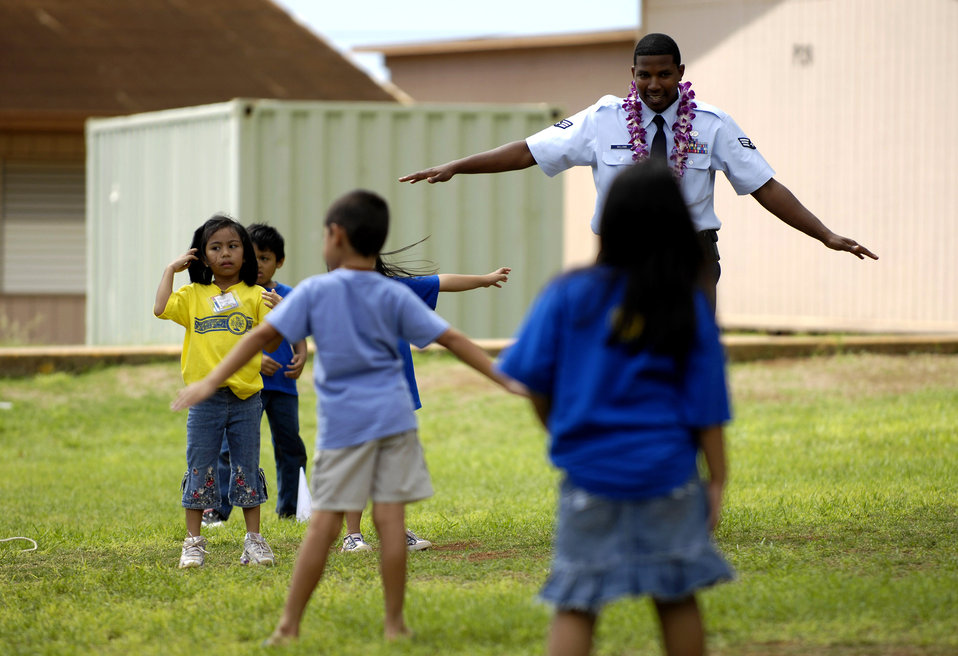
Learning to fly at Air Force Week Honolulu

Senior Airman Andrew William plays with children from August Ahrens Elementary School in Waipahu, Hawaii Sept. 10 during Air Force Week Honolulu. Approximately 800 Airmen from Hickam Air Force Base, Hawaii, spent their day at 80 local schools on the island of Oahu reading, playing and educating children about the Air Force. Airman William is with the 15th Civil Engineer Squadron.